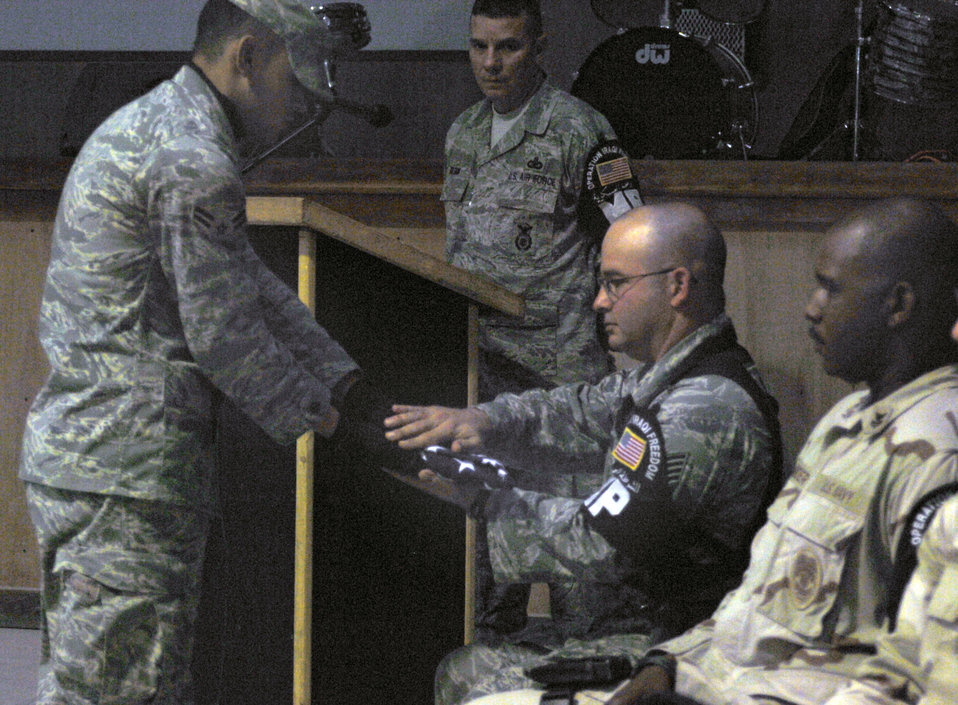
Ali Airmen mourn loss of K-9 team member

An honor guard member presents Staff Sgt. Sean Neisen with an American flag in honor of Goro, a military working dog, during a memorial ceremony Aug. 1 at Ali Base, Iraq. Sergeant Neisen, a K-9 handler, and Goro deployed from the 435th Security Forces Squadron from Ramstein Air Base, Germany, to the 407th Provost Marshal Office here. Goro died unexpectedly July 28 from natural causes.